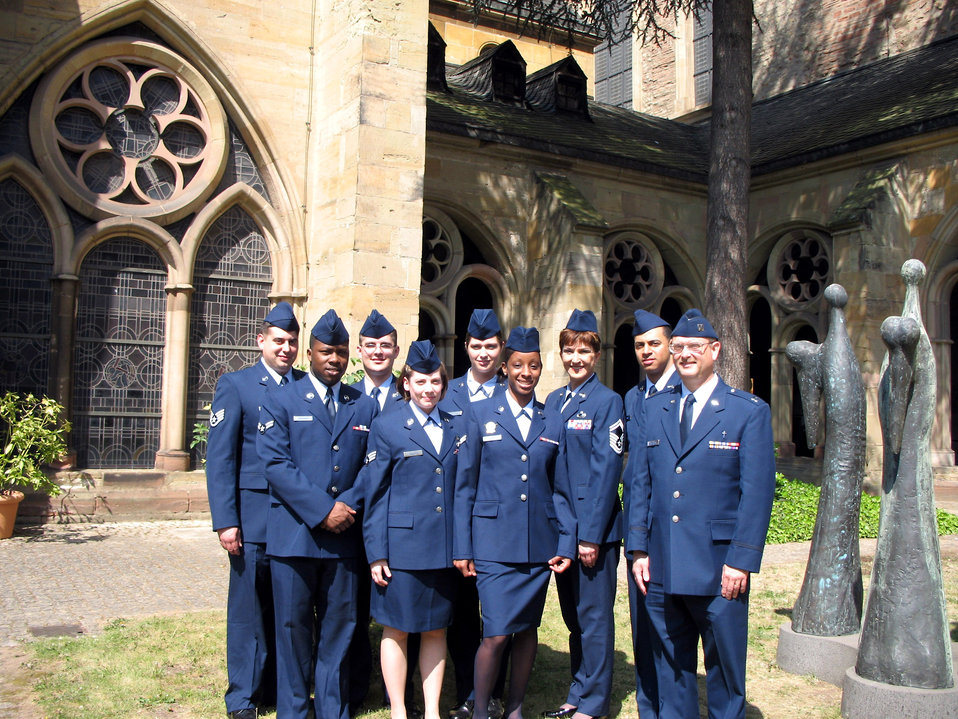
Spangdahlem Airmen take part in World Day of Peace

Members of the 52nd Fighter Wing from Spangdahlem Air Base, Germany, represented the Air Force at the World Day of Peace in Trier, Germany. Every year, the festival - dedicated to prayer and services focused on healing the rifts between cultures - is held in Germany's oldest city.